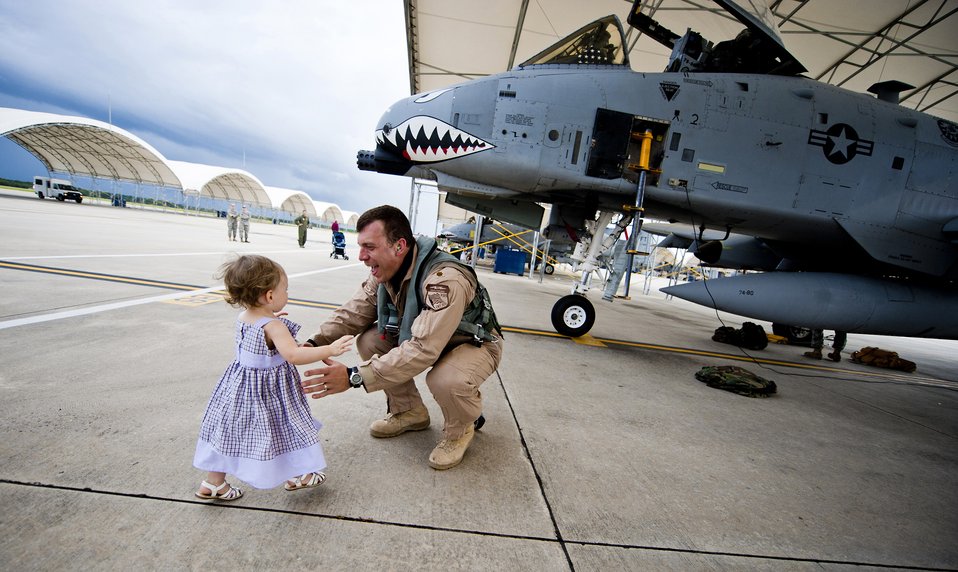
Welcome home

Maj. Craig Morash is greeted home by his daughter, Adeline, Oct. 11, 2011, at Moody Air Force Base, Ga., after returning from a deployment. Morash was part of a six-month deployment to Kandahar Air Field, Afghanistan, where he supported Operation Enduring Freedom. He is an A-10 Thunderbolt II pilot assigned to the 74th Fighter Squadron.